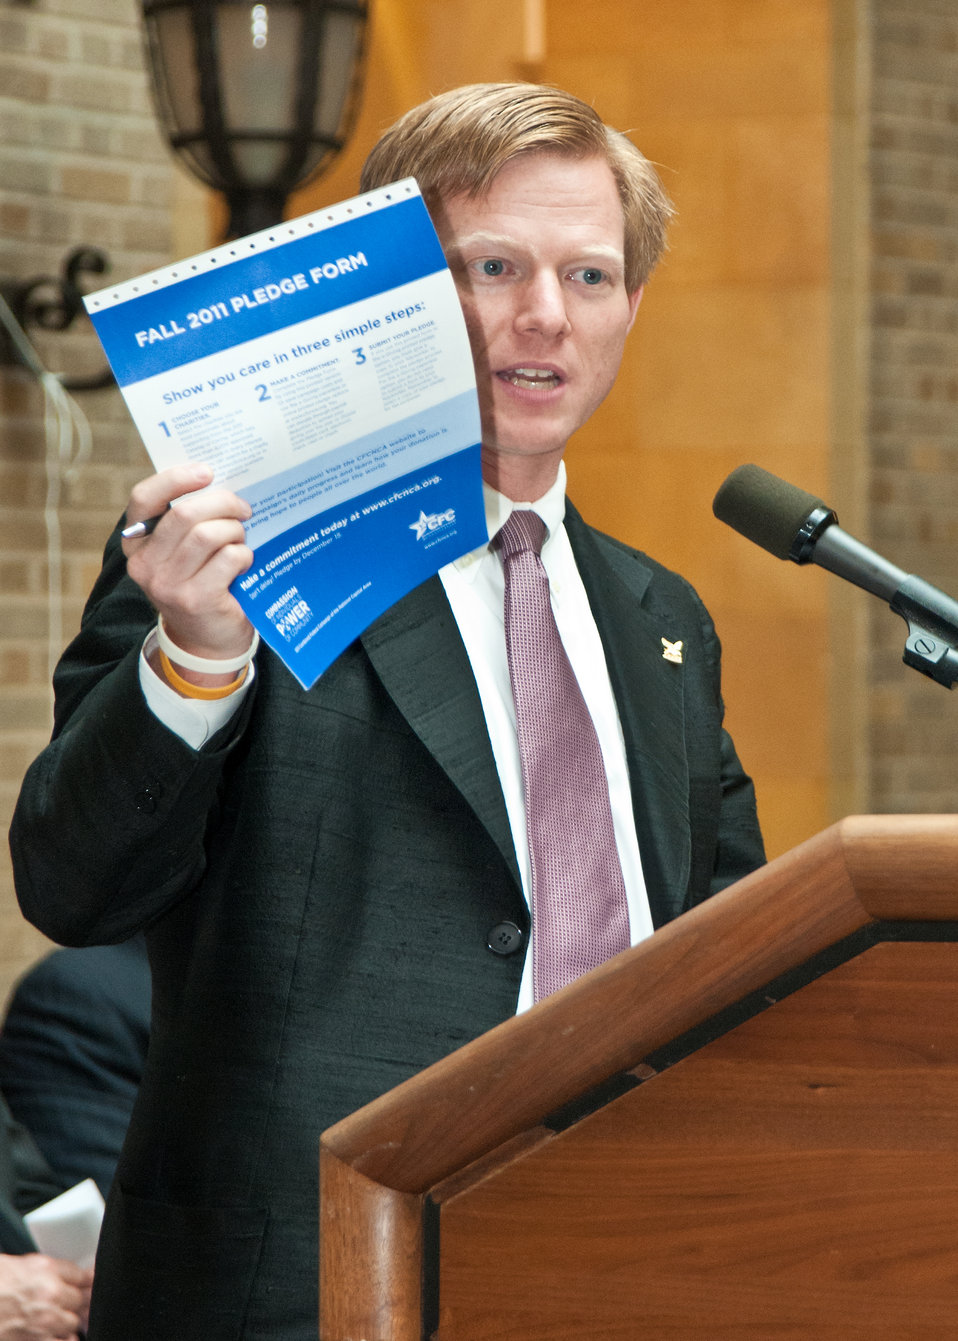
Max Finberg, Director, Office of Faith Based and Neighborhood Partnerships urges U.S. Department of Agriculture employees to donate to the Combined Federal Campaign during the kick-off of the USDA 2011 Combined Federal Campaign “Compassion of Individuals, Power of Community at the USDA in Washington, DC, on Wednesday, September 21, 2011. The theme of the 2011 campaign is “Celebrating 50 Years of Caring, Serving and Giving.”